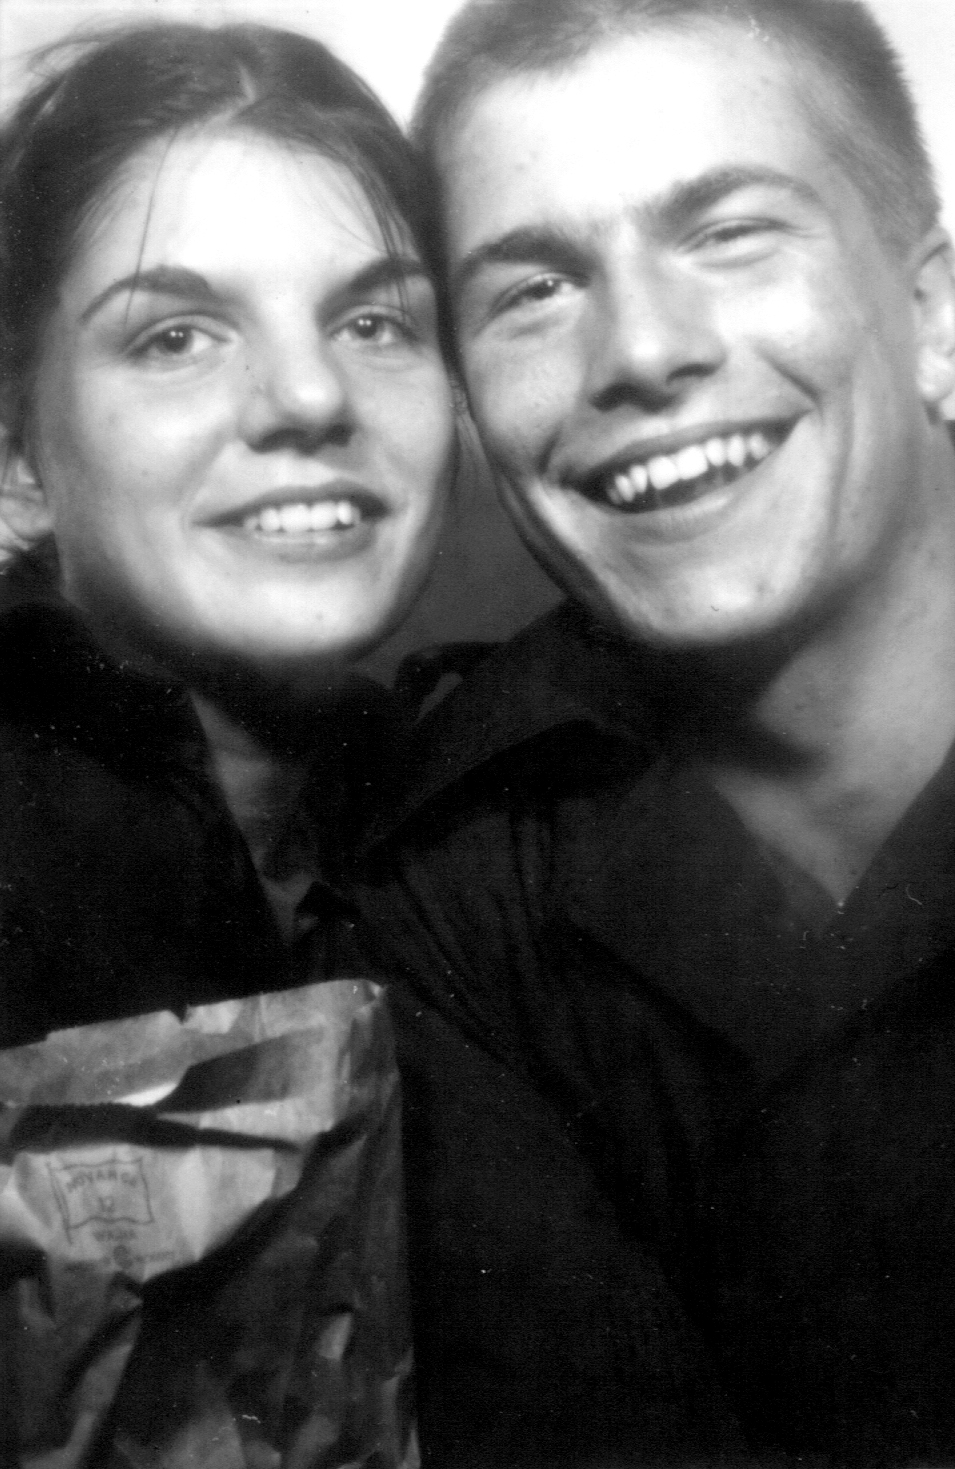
Two chiefs, one marriage, love for Air Force

LACKLAND AIR FORCE BASE, Texas -- In 1980, Chief Master Sgts. Lisa and Roger Sirois, then airmen basics in basic military training here, started a 25-year journey on their marriage and careers in the Air Force.